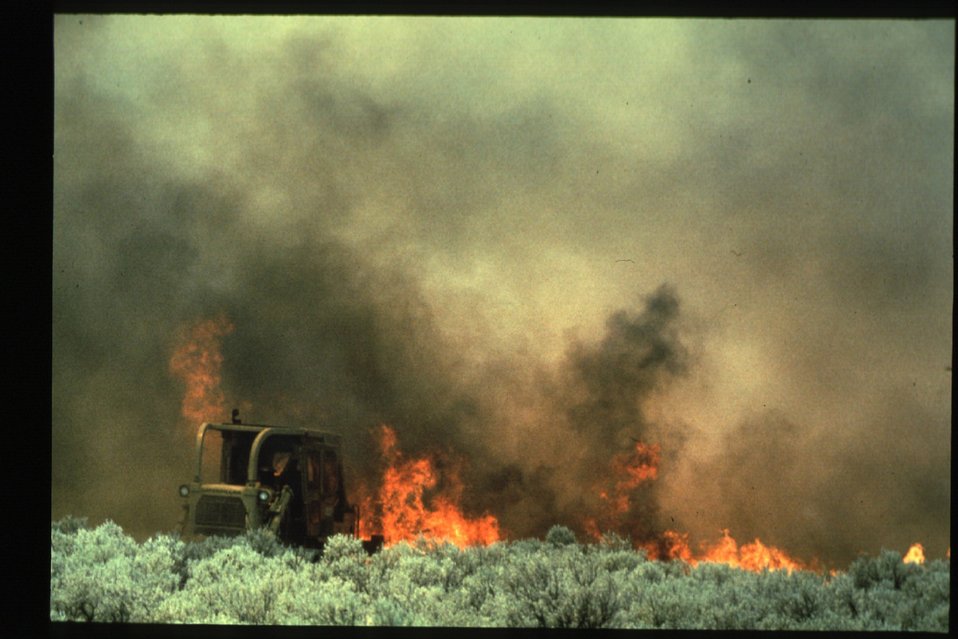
Boise Foothills Fire Danskin Mountains and South Fork of Boise River Equipment Four River Field Office LSRD Lower Snake River District